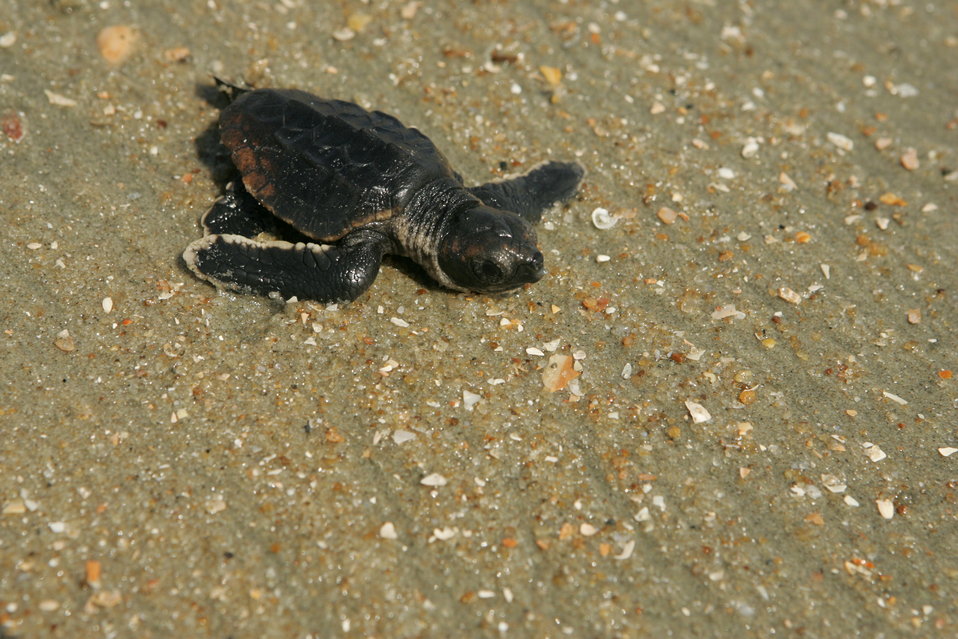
Baby loggerhead heading towards ocean

Baby loggerhead turtle makes its way to the ocean from the nest.